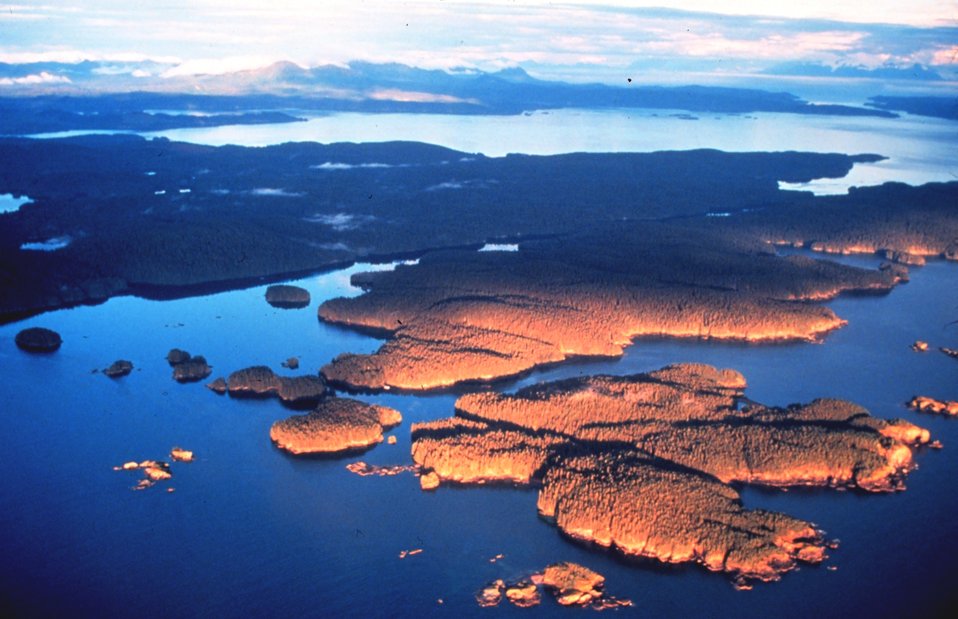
Late afternoon sun illuminates islands and mountains of Prince William Sound area